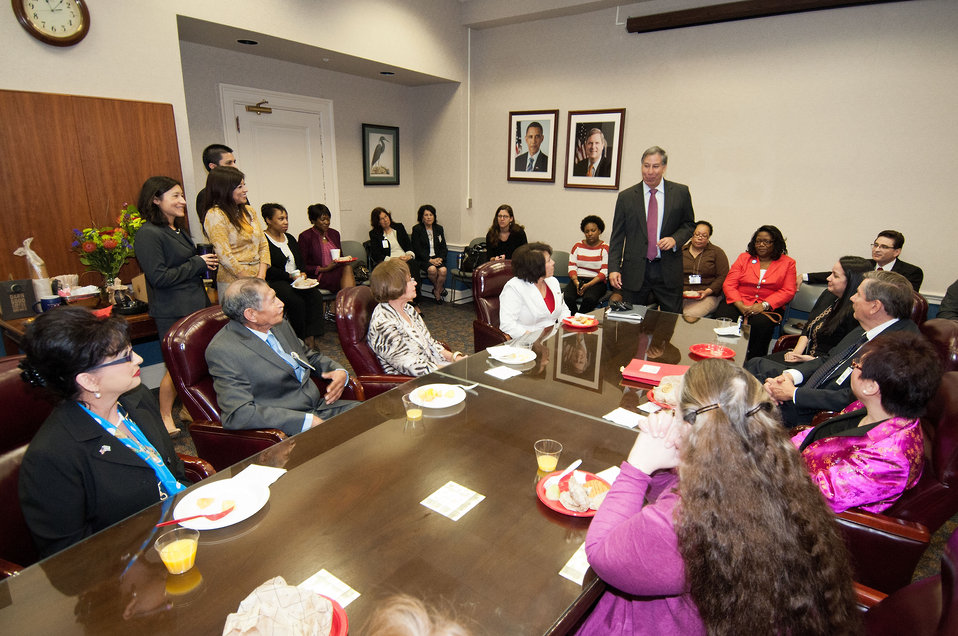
Ed Avalos, Undersecretary, Marketing and Regulatory Programs welcomes and reminisces on his experience as a young farm worker in New Mexico to the 2012 White House Champions of Change during a Breakfast Reception sponsored by the Office of Advocacy and Outreach and Office of the Assistant Secretary for Civil Rights at the United States Department of Department of Agriculture In Washington, D.C., Thursday, March 29, 2012. They were being recognized for their leadership, community service and service to others prior to being honored at the White House in Honor of Cesar Chavez Day. Chavez was a Mexican-American labor leader who used non-violent methods to fight for the rights of migrant farm workers in the southwestern United States. Chavez founded the Cesar Chavez Foundation, a group that advocates for the rights of farm workers, acting to increase wages and improve the working conditions and safety of farm workers.